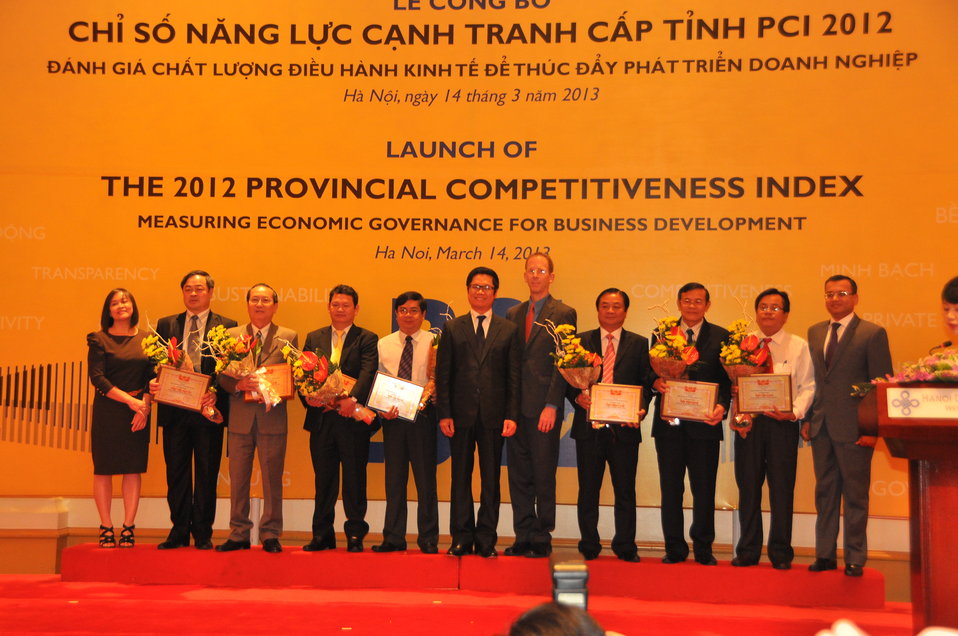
Provincial Competitiveness Index Launch, March 14, 2013

Hanoi, March 14, 2013